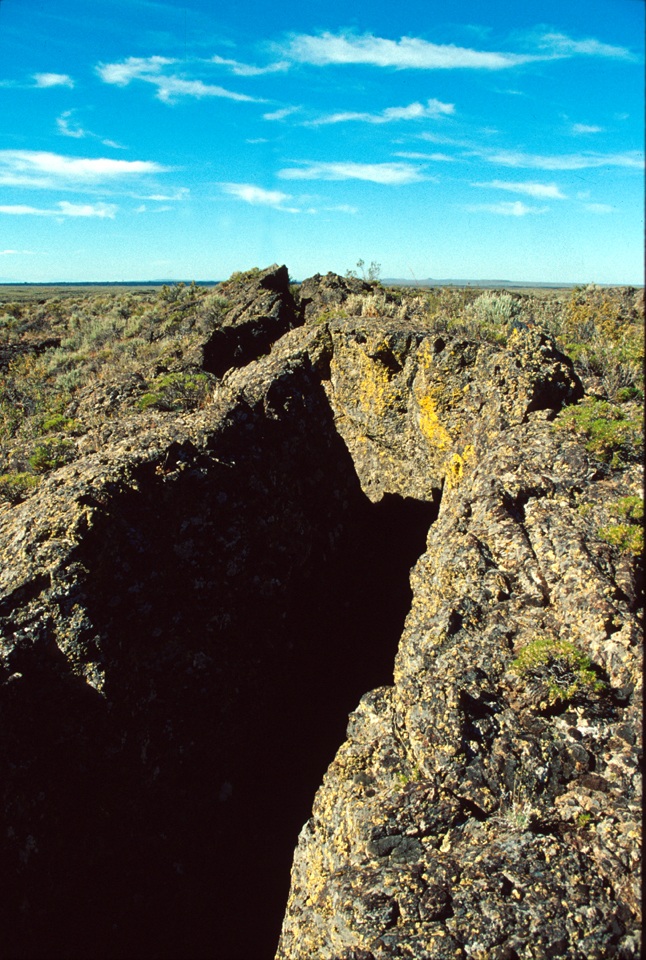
Shoshone Field Office USRD Upper Snake River District